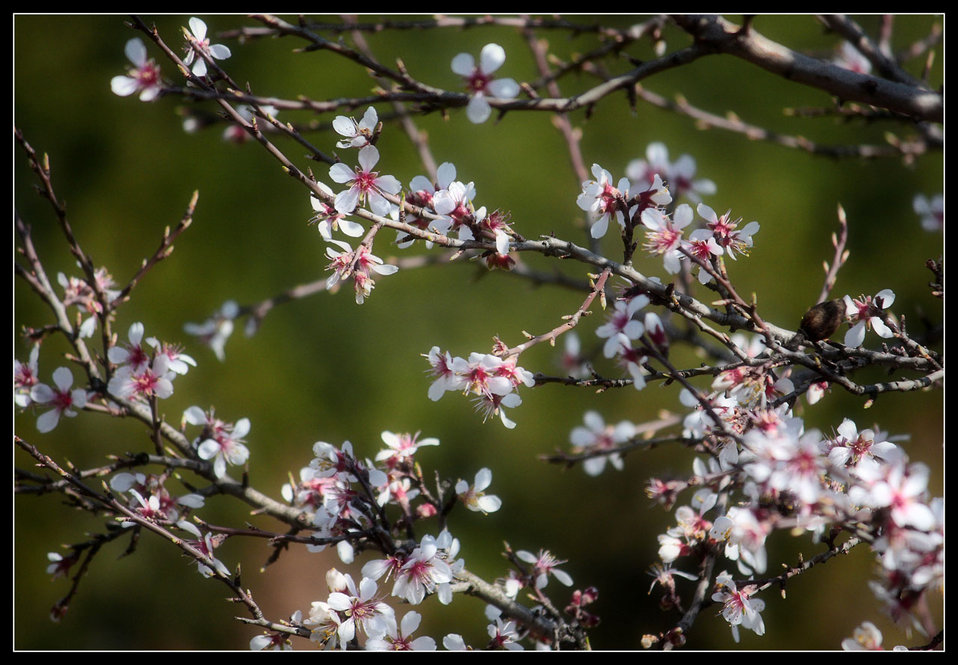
Springtime

Spring on salviano.